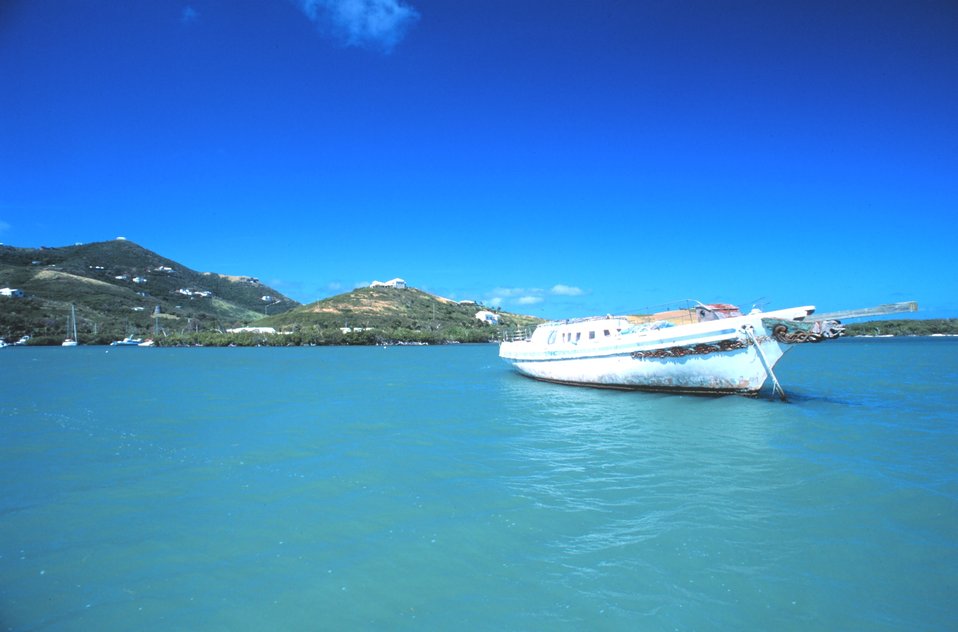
A view of Salt River Bay, where Columbus landed and was attacked by native Americans. This is a National Historical Park and Ecological Preserve.